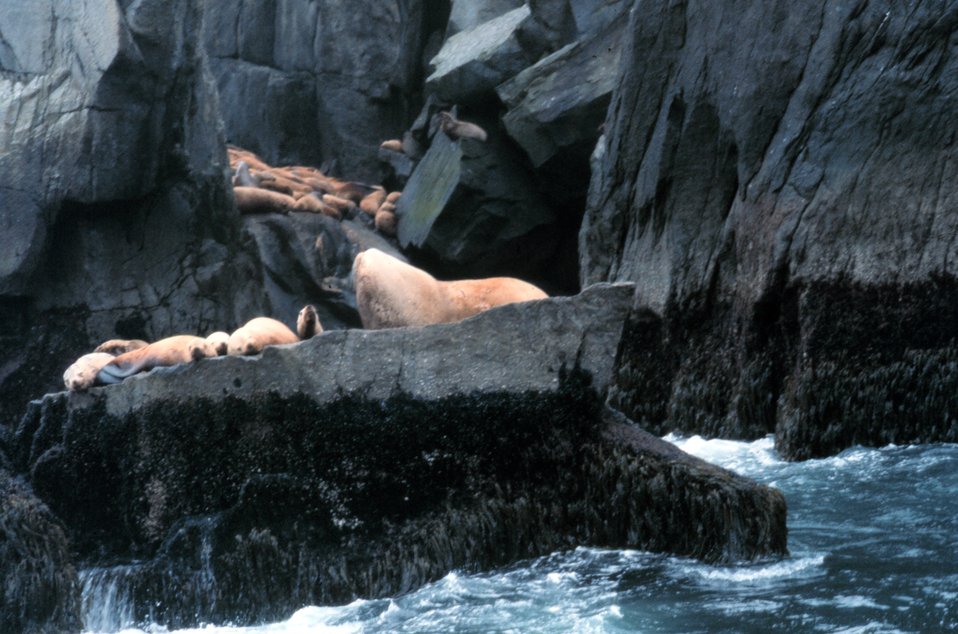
A large bull sea lion stands guard over his harem.